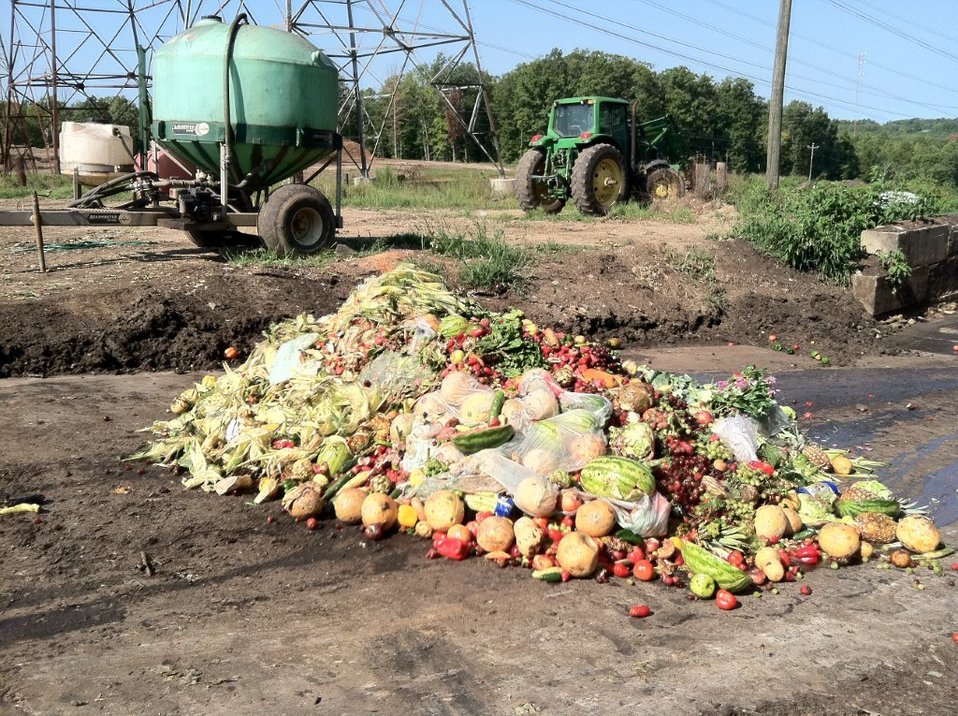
November 27, 2012, Food waste piles up too

America Recycles Day 2012 was focused on food waste. Less often on our minds, but on average, we each waste about half of a pound of food each day.

Each year on November 15, America Recycles Day, we reflect on our waste in the United States and act to better protect our environment. This year, EPA’s Food Recovery Challenge kicked off events across the country to highlight different ways we can reduce wasted food - from source reduction and donation, to simply composting.

More about the Food Recovery Challenge

Reduce waste at home!

America Recycles Day - A Presidential Proclaimation